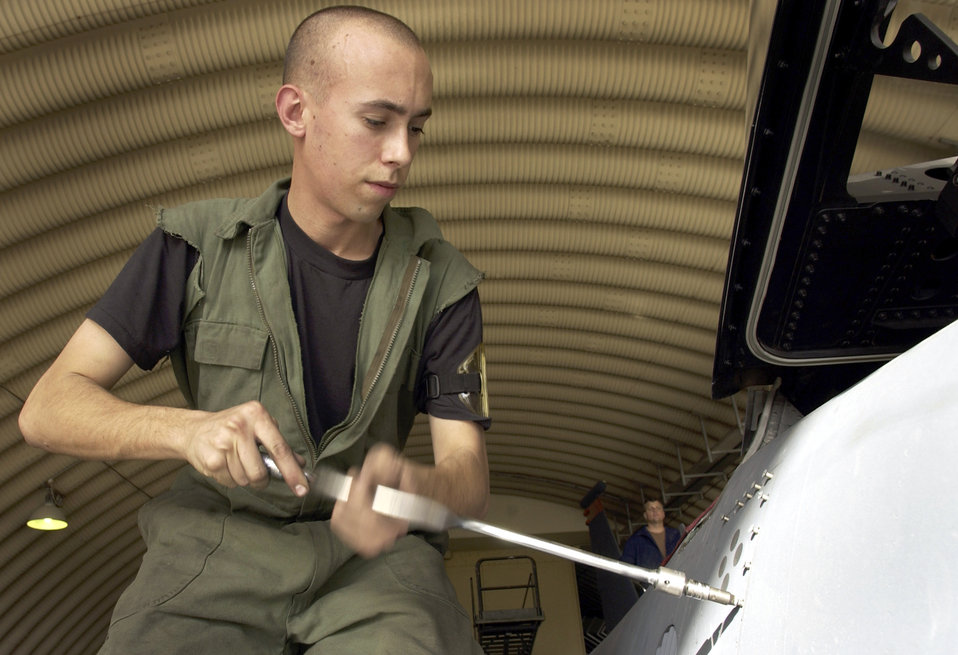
The work never ends

SOUTHWEST ASIA -- Airman 1st Class Tim Knighting removes a panel from an F-15 Strike Eagle during a periodic phase inspection at a forward-deployed location supporting Operation Iraqi Freedom. Airman Knighting is assigned to the 391st Expeditionary Fighter Squadron.